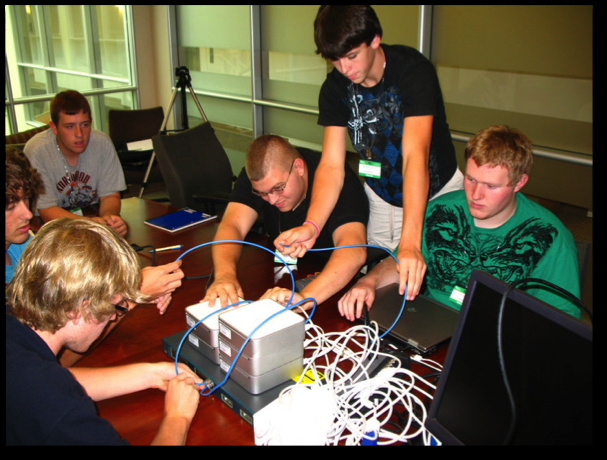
arcstudents